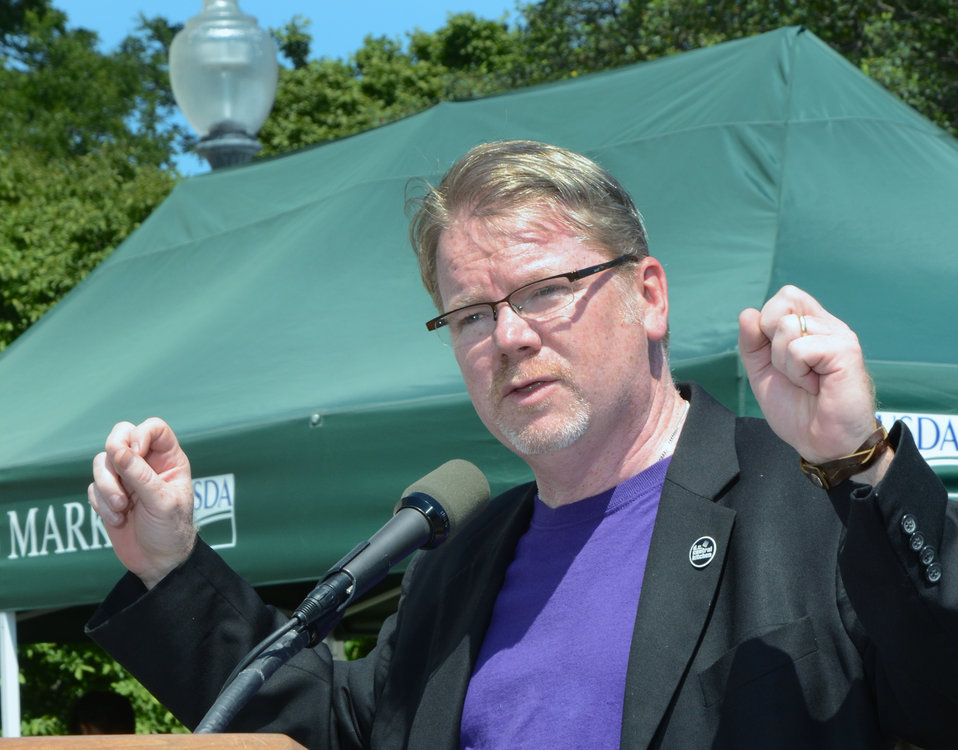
Mike Curtin, CEO of DC Central Kitchen speaking at the USDA kickoff event for Feds Feed Families at the U.S. Department of Agriculture Farmers Market in Washington, D.C., on Friday, June 8, 2012.